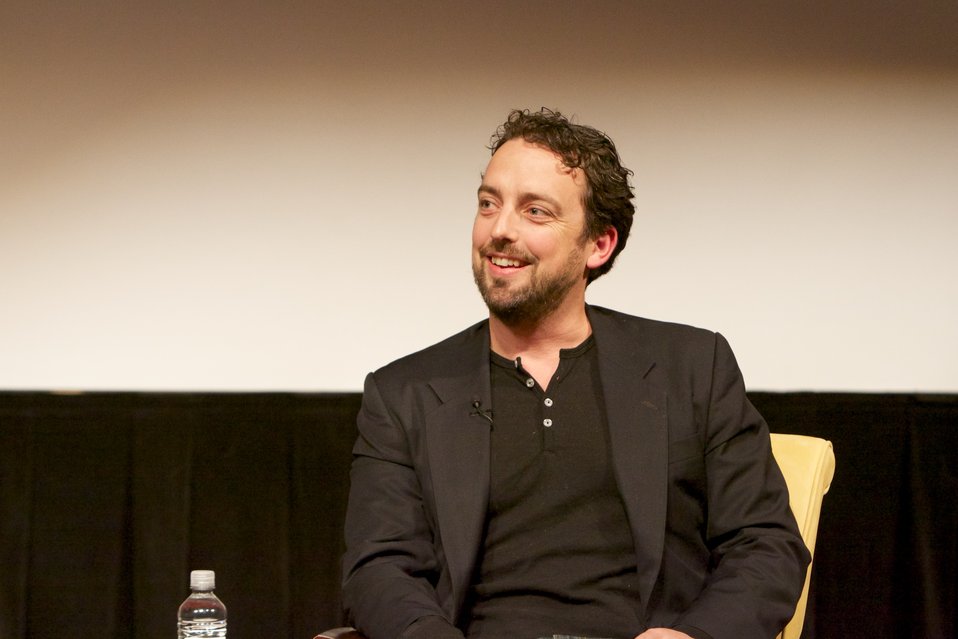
The Gettysburg Story and The Wheatfiled

The Gettysburg Story and The Wheatfield; Jake Boritt, filmmaker, discusses and answers questions about the films The Gettysburg Story and The Wheatfield.